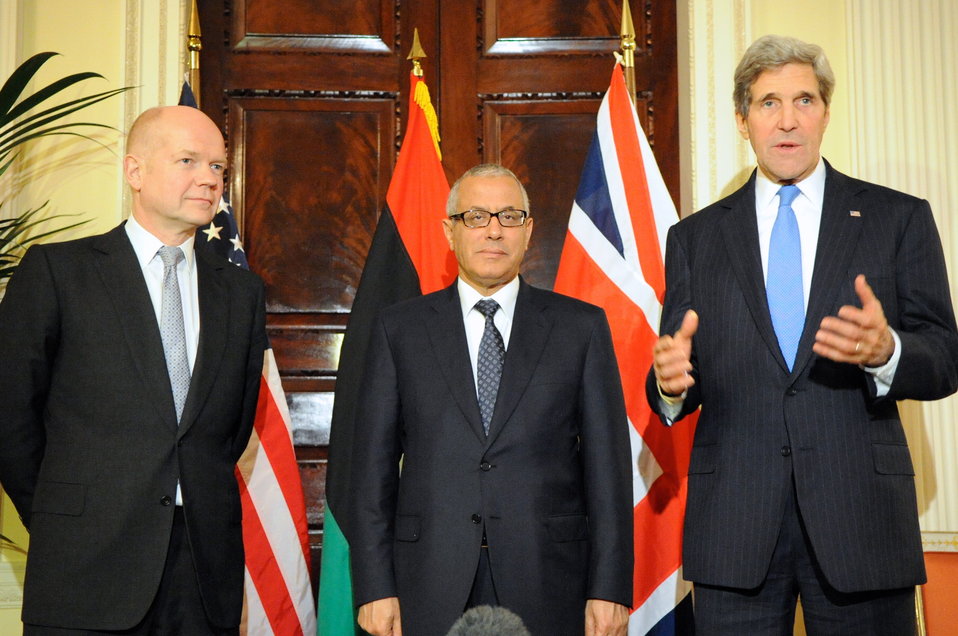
Secretary Kerry, UK Foreign Secretary Hague Hold News Conference With Libyan Prime Minister Ziedan

U.S. Secretary of State John Kerry speaks as he is joined by British Foreign Secretary William Hague and Libyan Prime Minister Ali Zeidan following a trilateral meeting in London, United Kingdom, on November 24, 2013.